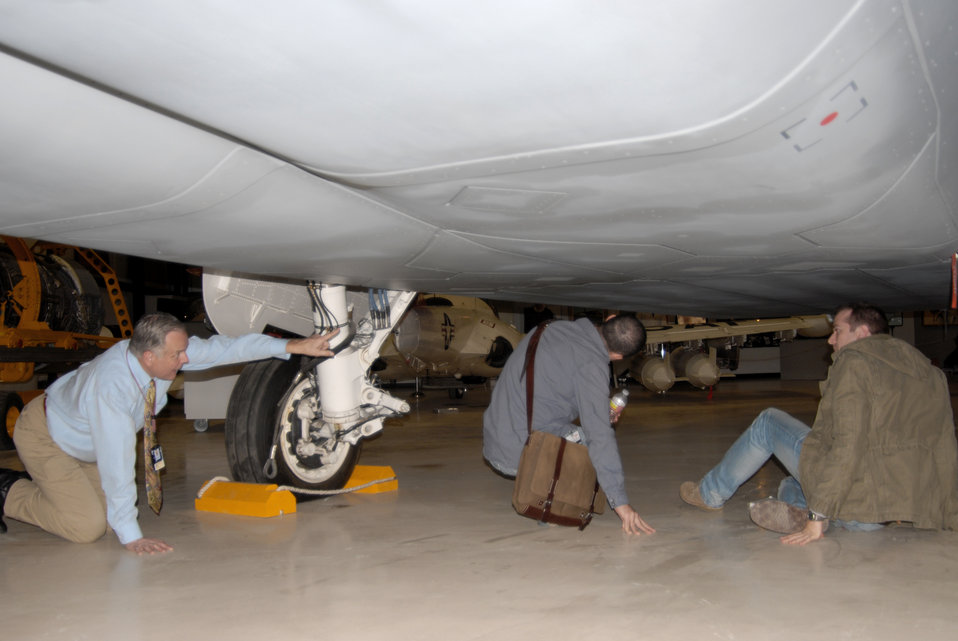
Disney

Fred Johnson points out details of the Air Force Flight Test Museum's YF-22 Raptor prototype Nov. 18, 2010, at Edwards Air Force Base, Calif., as two Walt Disney animators take a closer look at the aircraft. Nine Disney animators toured the base to gather developmental research for a possible feature film idea. Mr. Johnson is the curator of the Air Force Flight Test Museum.